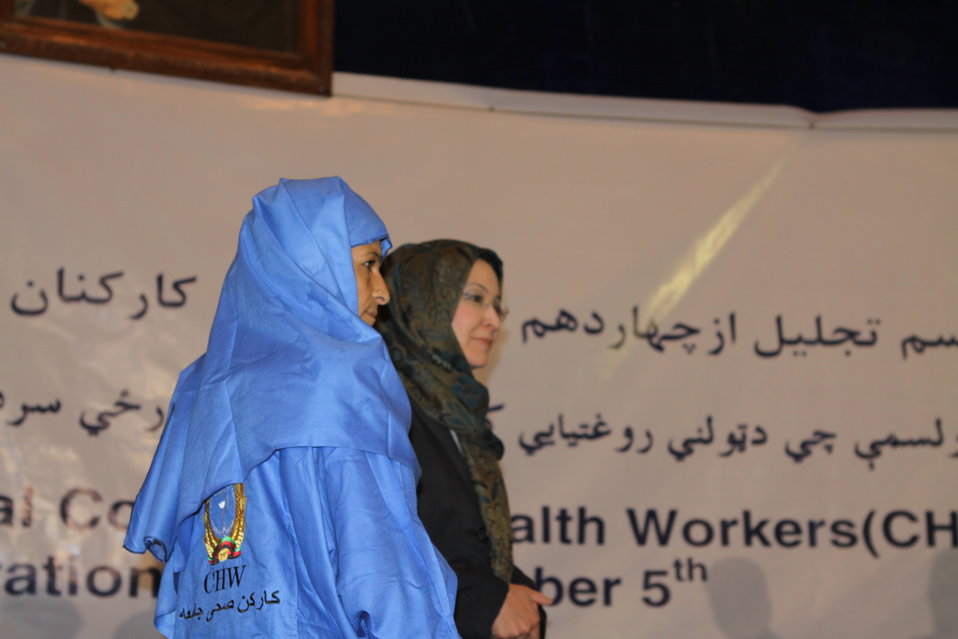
Community Health Workers Celebrated

Kabul, Afghanistan | December 5, 2010 — In support of the United Nations designated International Volunteer Day for Economic and Social Development, Afghanistan’s Ministry of Public Health celebrated its annual Community Health Worker Day today. Acting Minister of Public Health Dr. Suraya Dalil, USAID Senior Deputy Mission Director Robert Hellyer, other government officials, and international donors joined in recognizing the critical contribution of community health workers in Afghanistan and encouraging them to continue their voluntary support to their communities.
The event praised the contributions of the more than 22,000 volunteers throughout the country who deliver community level health-education, counseling, and services out of village health posts located in private homes. The Ministry of Public Health envisioned that community-based healthcare programs will actively encourage communities and families to adopt healthy lifestyles and behaviors, and provide families access to high quality and socially acceptable preventative medicine and life-saving services.
“We have 22,000 community health workers in Afghanistan that are able to implement the basic and standard medicines. They all have been trained through a job description,” said Minister Dalil. Addressing the health workers, she added, “I am proud and feel powerful that I have people like you.”
USAID-funded health projects collaborate closely with the Ministry of Public Health to improve the health and nutritional status of Afghans, provide quality primary healthcare, and promote healthy behaviors at the community and household-levels. USAID supported the training of more than 9,000 of the volunteer community health workers currently working in Afghanistan.
“On behalf of the American people, I congratulate the Community Health Workers for their diligence to gain the skills and knowledge necessary to serve their communities in this important role,” said USAID Senior Deputy Mission Director Hellyer. “USAID strongly supports community based health care and believes that quality community-based health services are essential to reaching Afghanistan’s Millennium Development Goals.”
To support the Basic Package of Health Services, USAID assisted in developing the community health worker training manual, helped train community health worker supervisors and master-trainers, facilitated in-service training, and produced and developed reporting tools, job aids, and education materials.